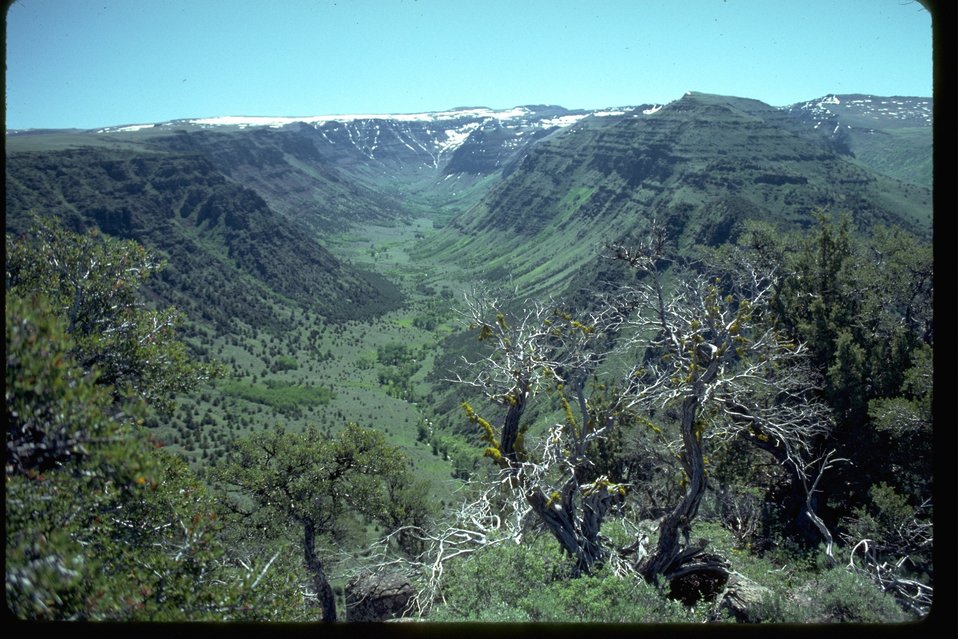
Looking east from Big Indian Outlook up the Big Indian Gorge in spring time.